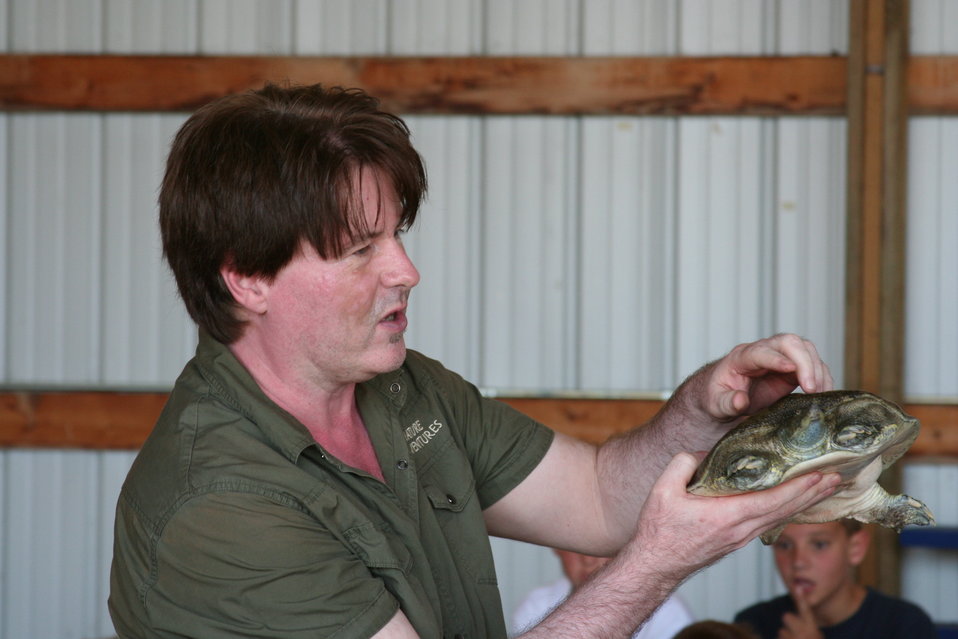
2011 Huron Prairie Fest